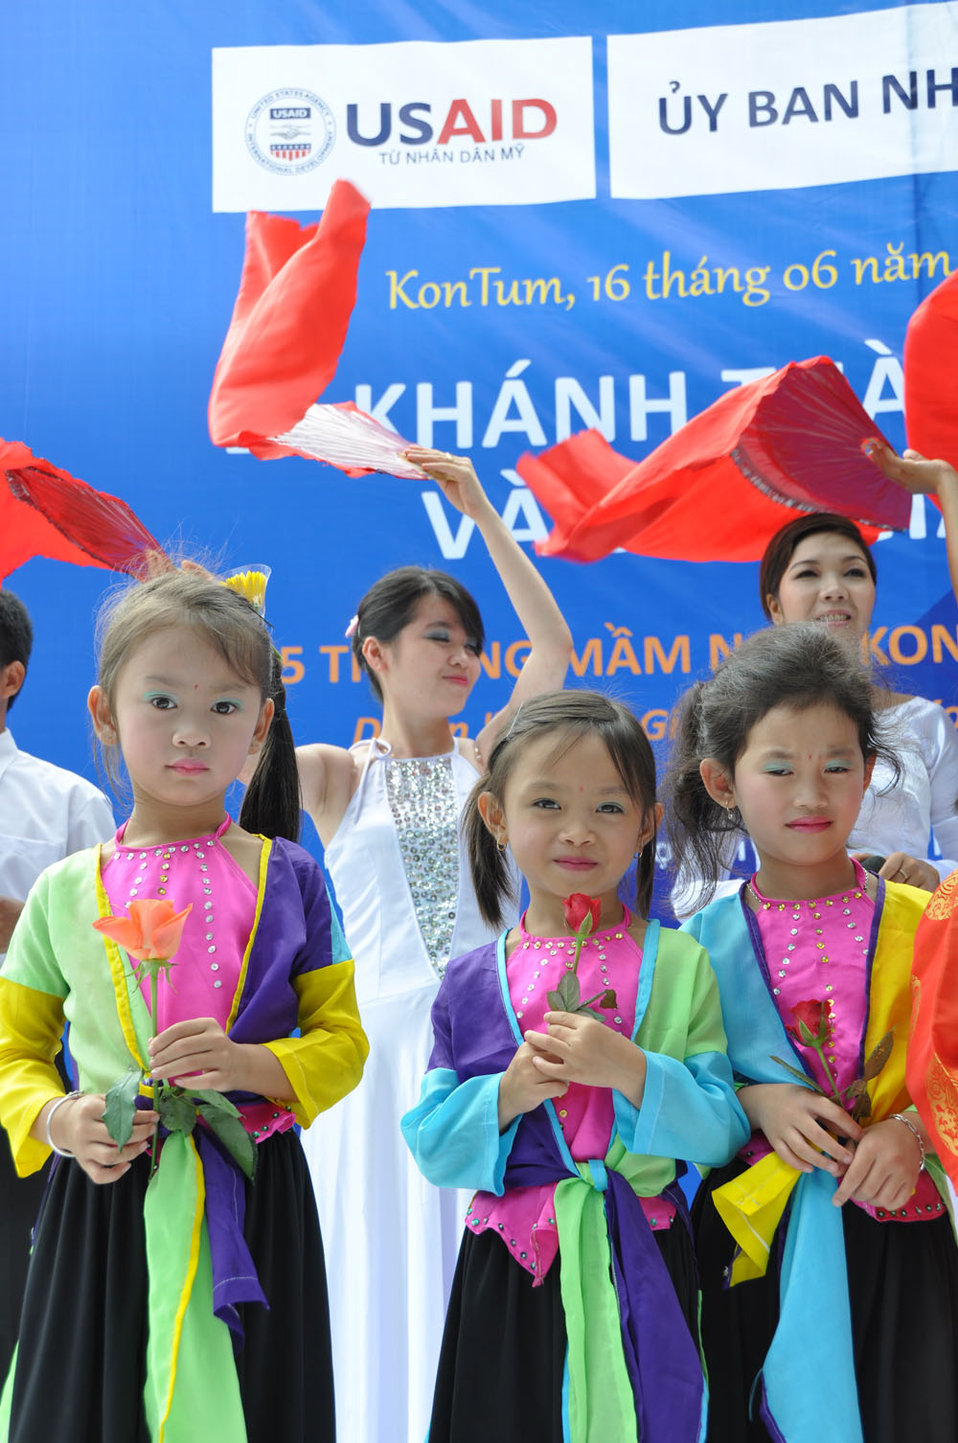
Children celebrate 25 refurbished and expanded kindergartens.